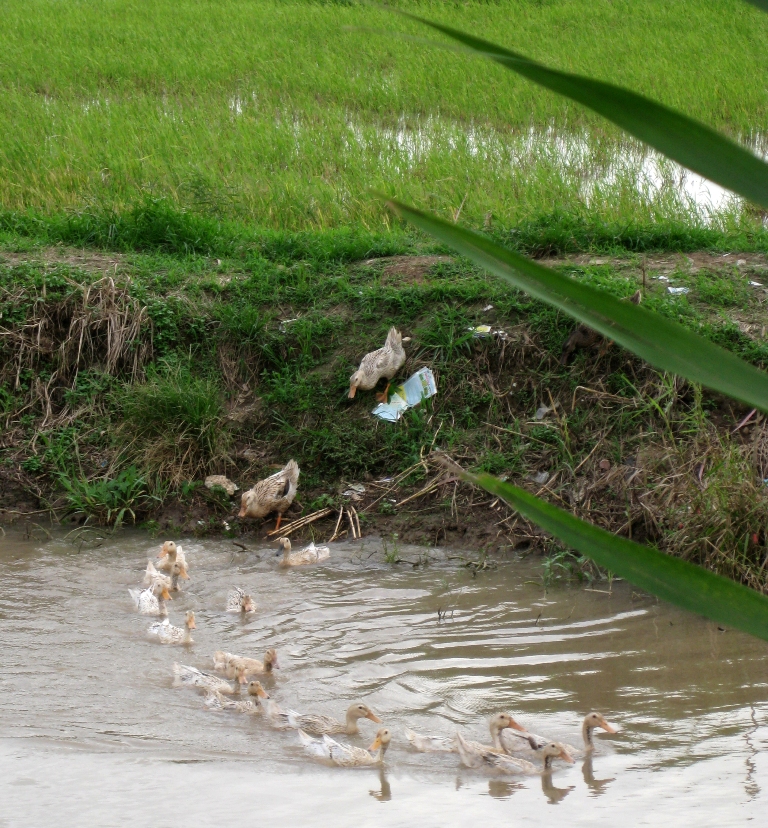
USAID helps Vietnam combat bird flu

Ducks on the move in Can Tho, Vietnam